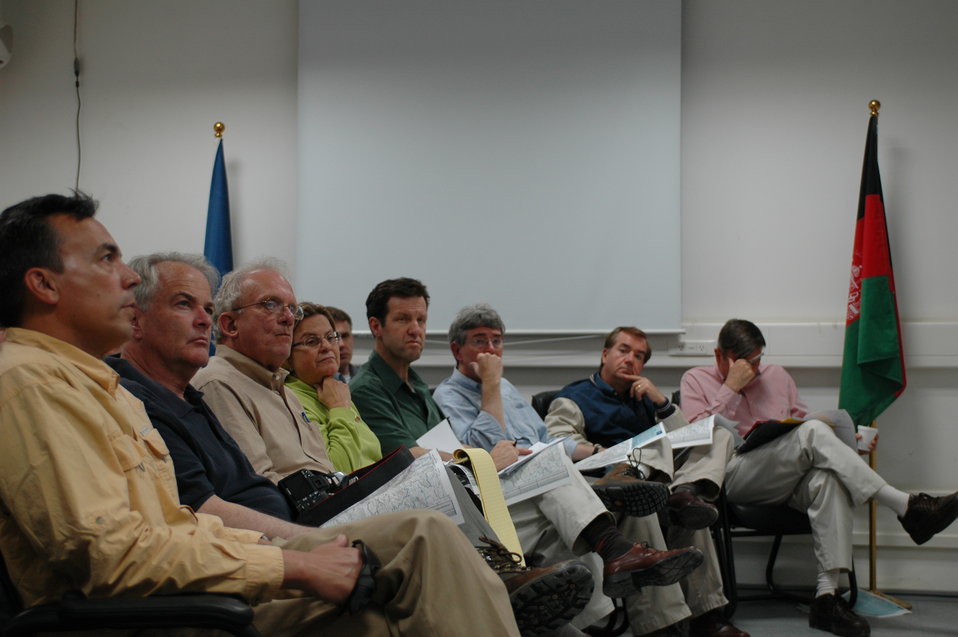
CODEL Berman